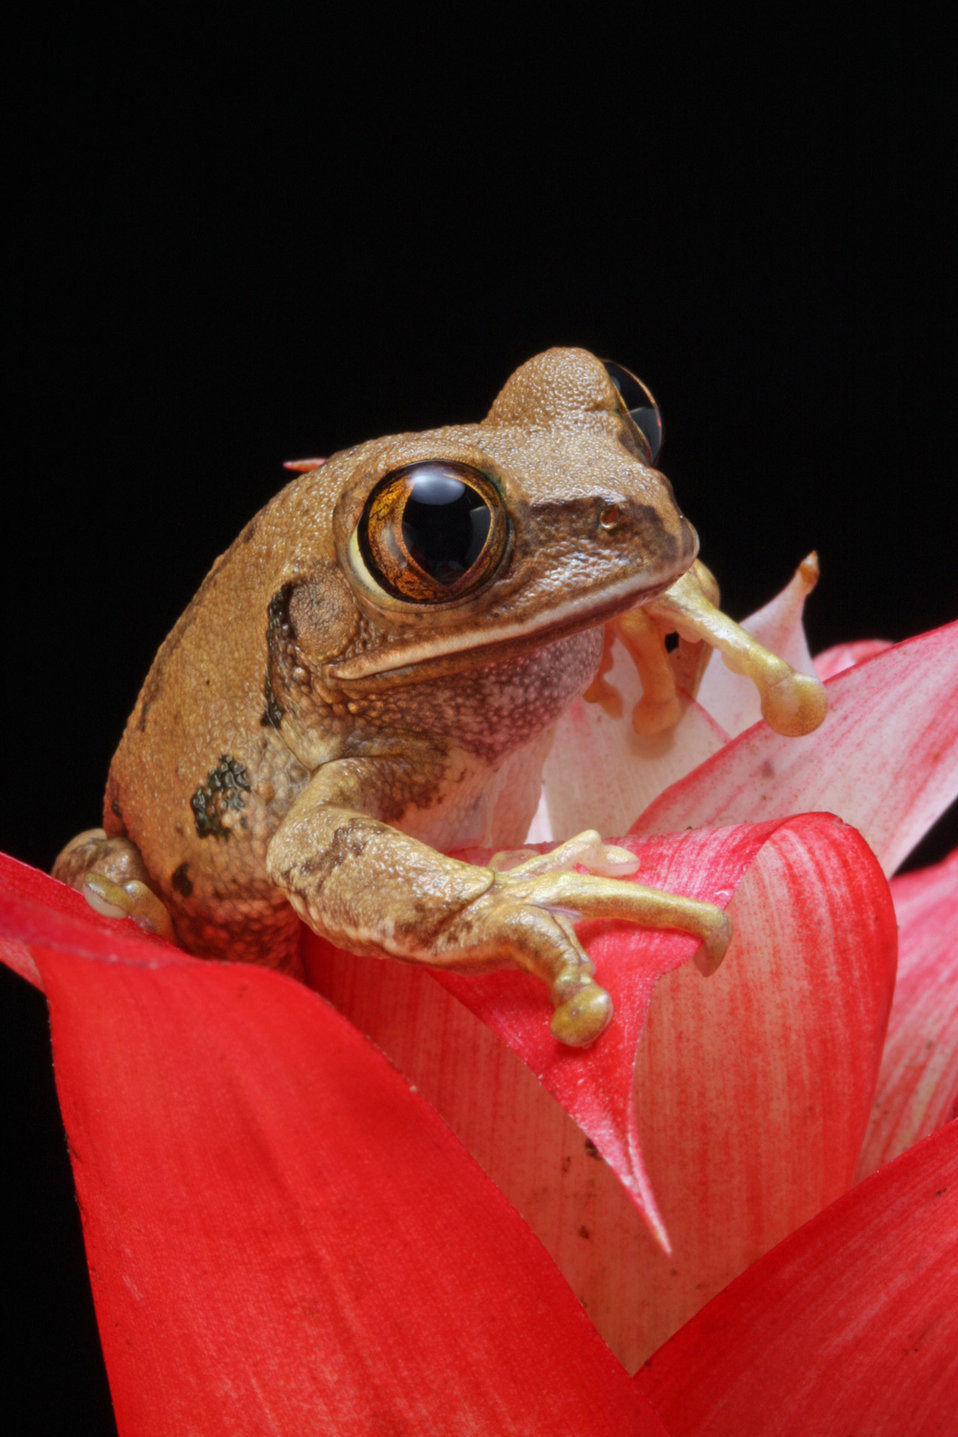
Marbled reed frog on rent plant.